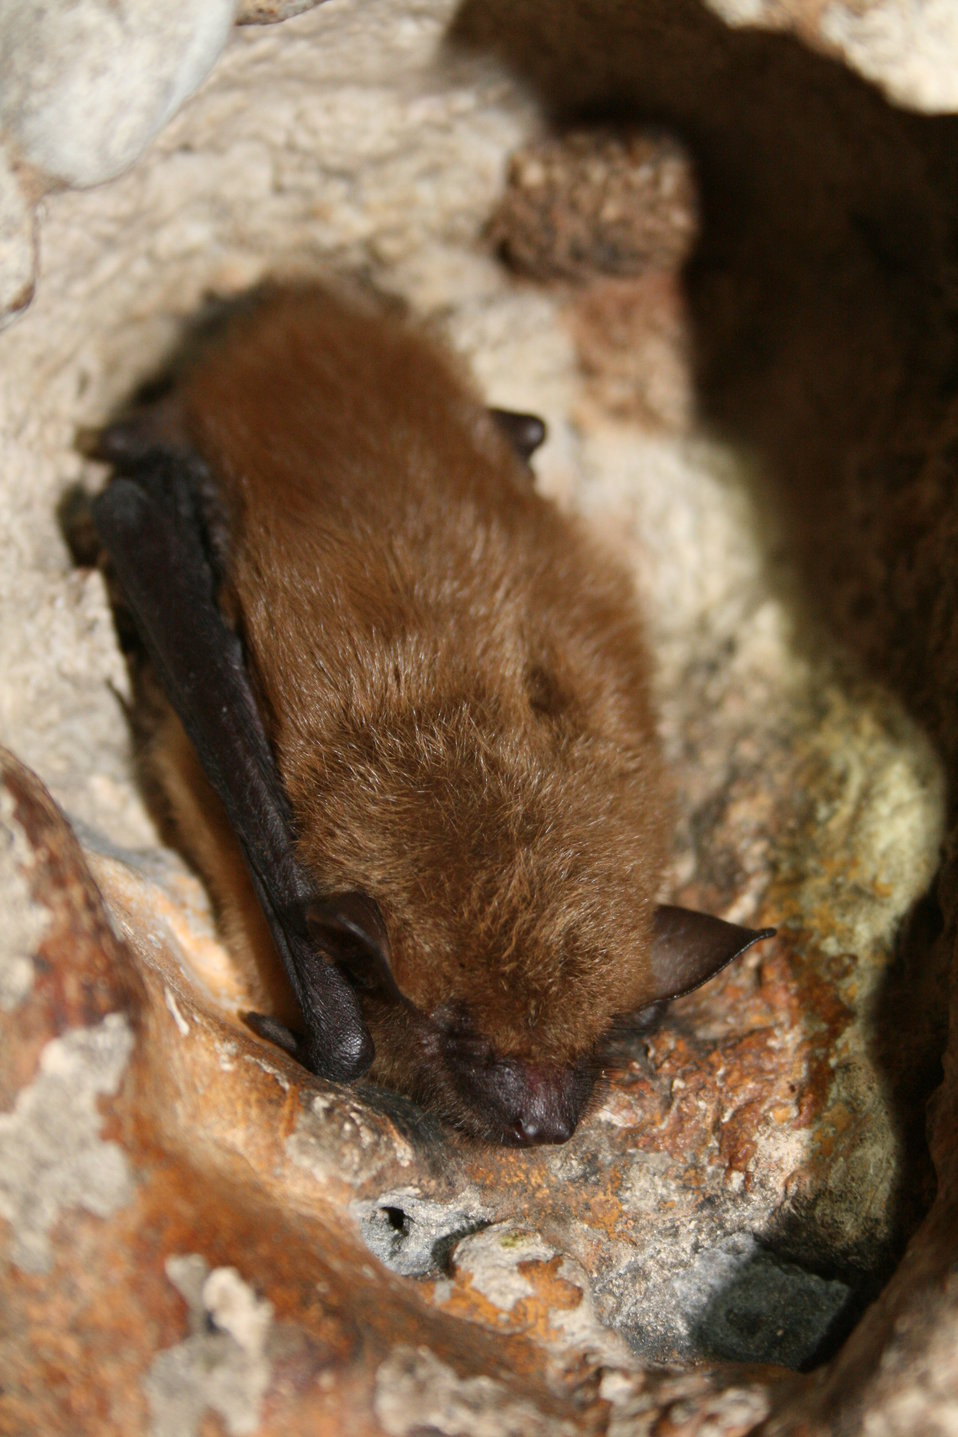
Big brown bat